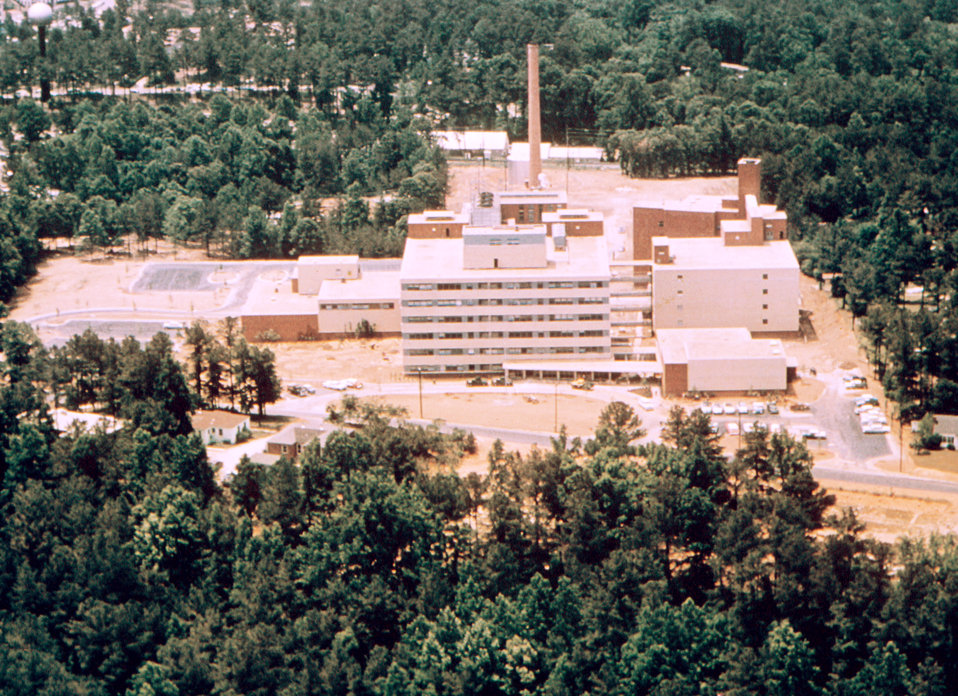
A 1960 aerial view of the new CDC campus on Clifton Rd. in Atlanta, GA. (facing south).